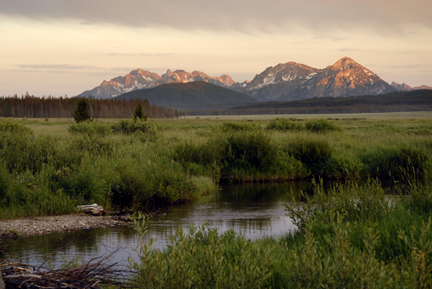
Sawtooths01BradEells07 08

View of the Sawtooth Range in Idaho.